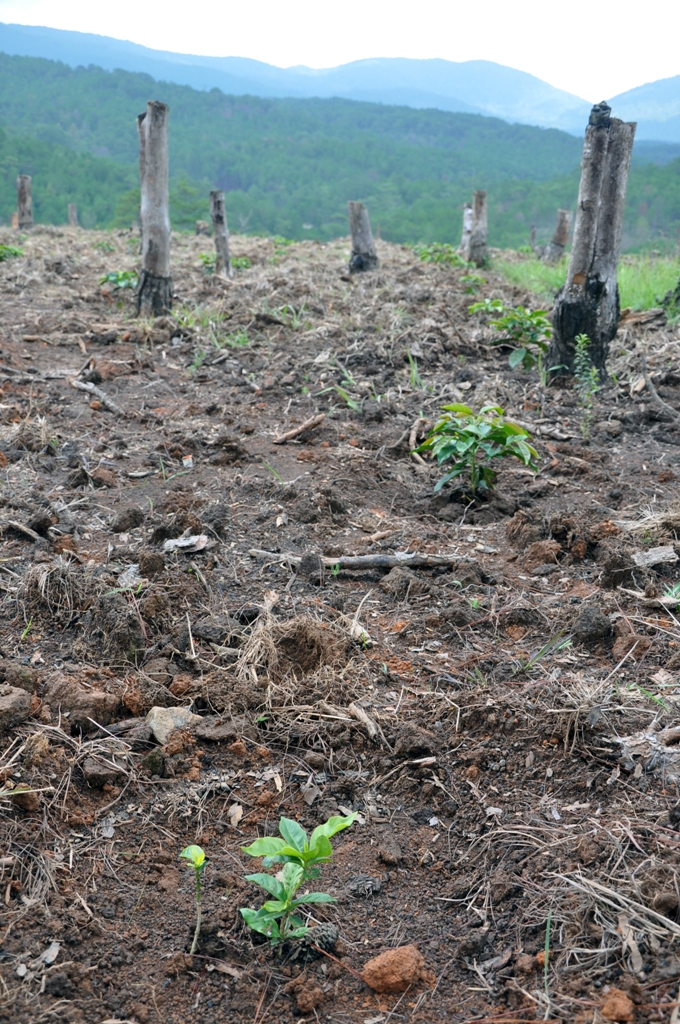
USAID helps Vietnam conserve biodiversity through community involvement.